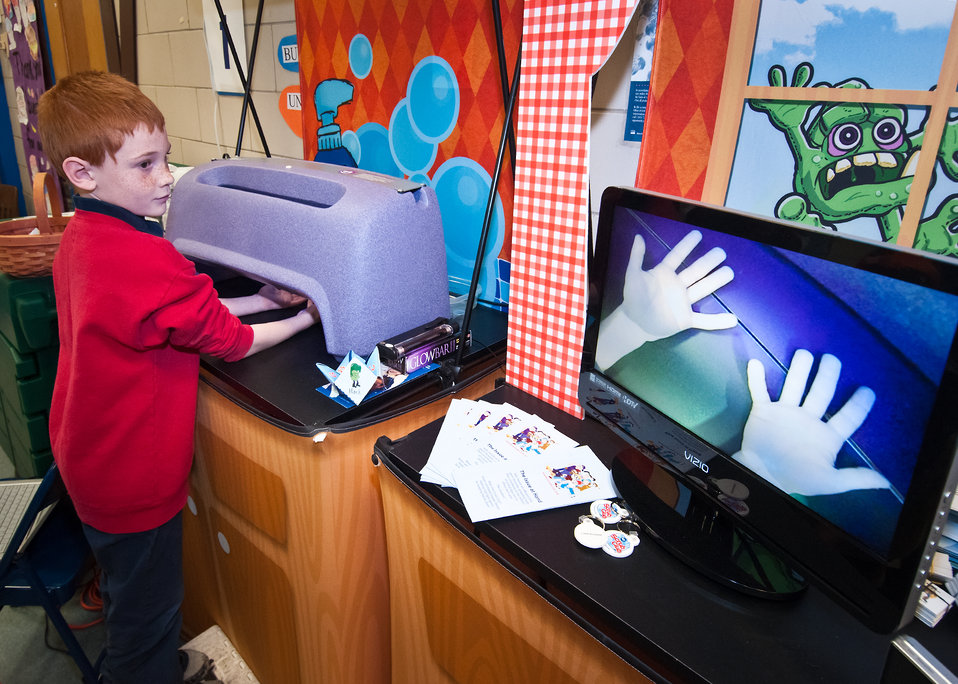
Jason Early first grade student from Ms. Lindsay Gormus’s class at Maryland City Elementary School in Laurel, MD, learns the importance of washing your hands so not to spread bacteria. Jason is viewing his hands under ultra-violet light to make sure he has washed the bacteria off his hands. The United States Department of Agriculture, Food Safety Inspection Service held a Food Safety Education Camp at Maryland City Elementary School, on Thursday, May 5, 2011.